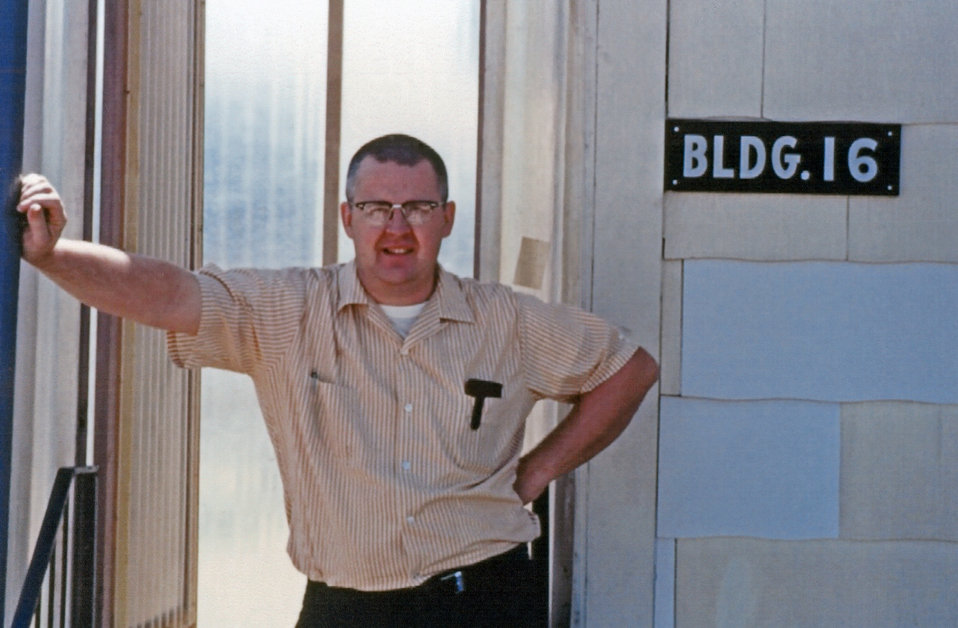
This photograph, taken sometime in the 1970s, showed Dr. William "Bill" Collins, long-time Centers for Disease Control malariologist, standing outside a laboratory on the organization's Chamblee Campus located in Atlanta, Georgia.